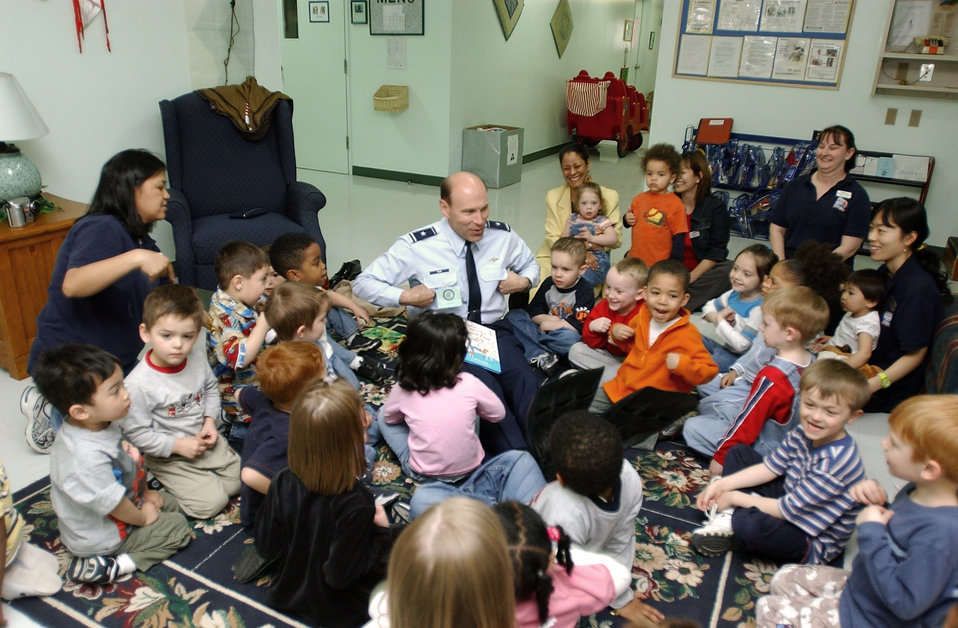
Walk like a duck

MISAWA AIR BASE, Japan -- Brig. Gen. William J. Rew wears flippers as he imitates a duck while reading,